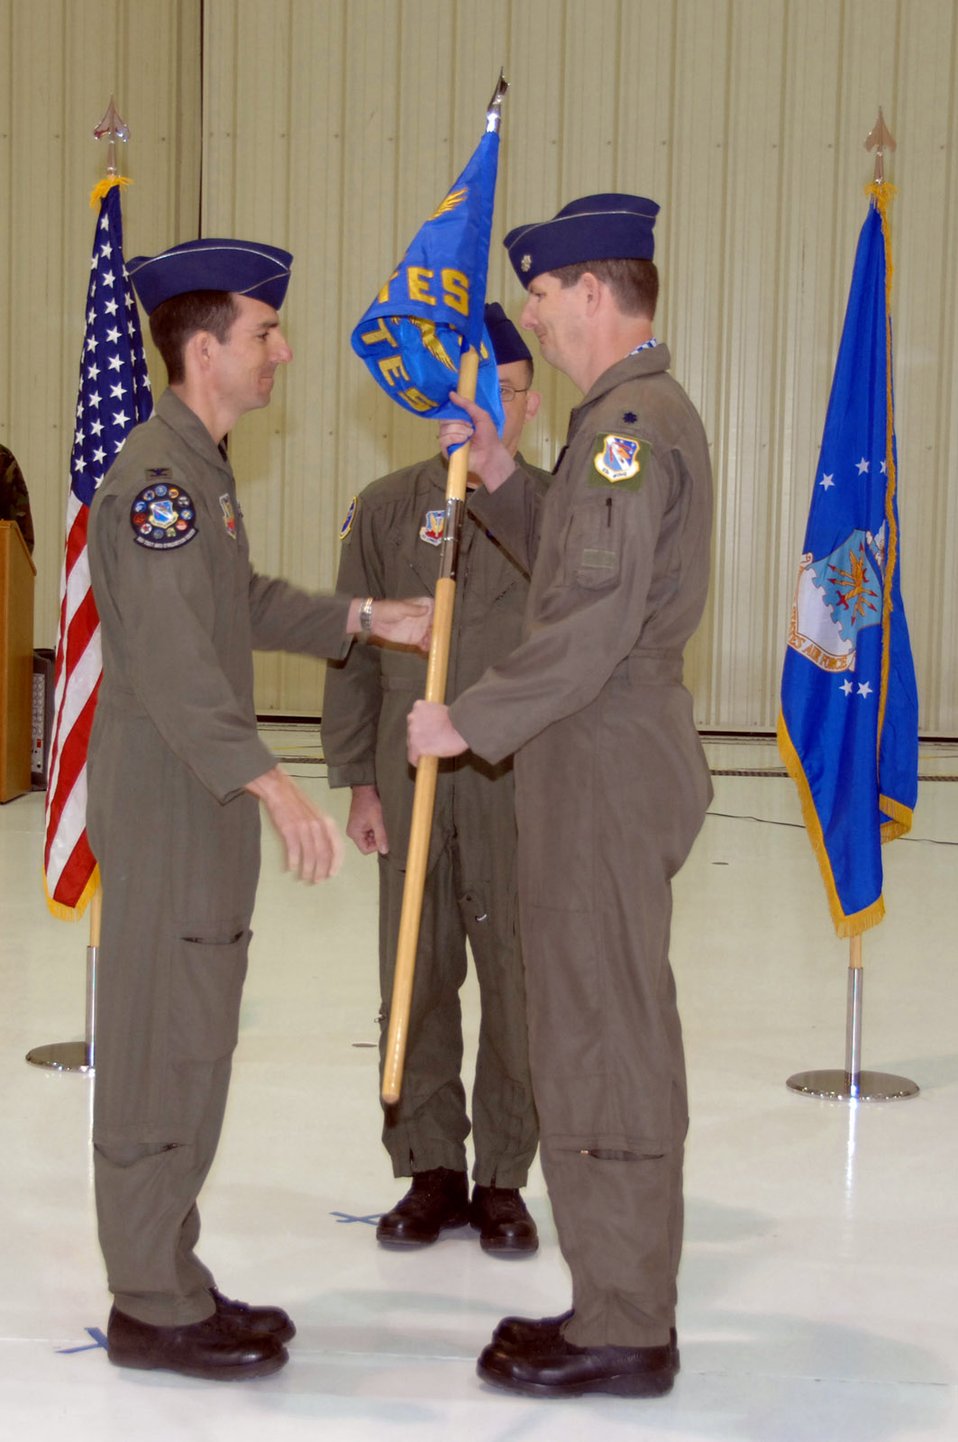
556th becomes newest UAS squadron

Col. Brian O' Rear hands off the guideon to Lt. Col. Ty Moyers during a squadron activation ceremony for the 53rd Test and Evaluation Group March 5 at Chreech Air Force Base, Nev. Colonel O'Rear is the 53rd TEG deputy commander. Colonel Moyers is the new 556th Test and Evaluation Squadron commander.